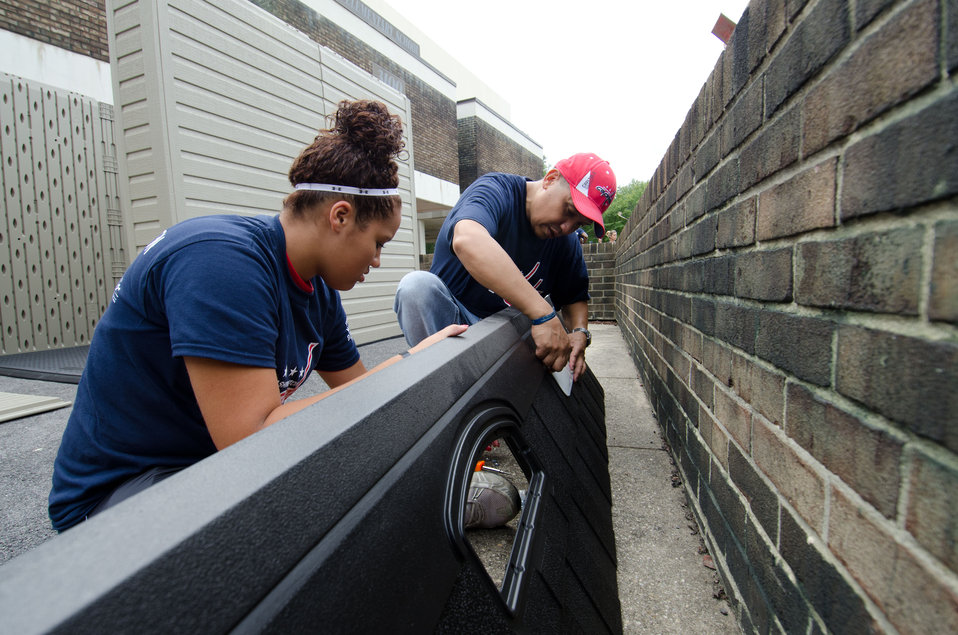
Descendants of U.S. Supreme Court Justice Thurgood Marshall, son, John Marshall and his grand-daughter Brianna attach window panels to a skylight section of a prefabricated garden toolshed, when the U.S. Department of Agriculture (USDA) People’s Garden Executive Master Gardeners, friends, and family, along with Washington Capitals fans volunteer in District of Columbia Public Schools’ (DCPS) Beautification Day, on Saturday, August 25, 2012, at Thurgood Marshall Elementary School, in Washington, D.C. They are one of many multi-generational families volunteering at this school today. Each year people are invited to help “spruce up” public school facilities in preparation for the first day of school. More than 70 volunteers pitched in at this large school facility. The People’s Garden effort involves building and painting raised planter boxes, then preparing the soil mixture so they are “ready to grow.” Washington Capitals Forward Mike Riberio, his family and mascot Slapshot participated in every project underway at Marshall School. From the outside gardens, to inside murals, and robotics worktable construction, the teams made their goals.